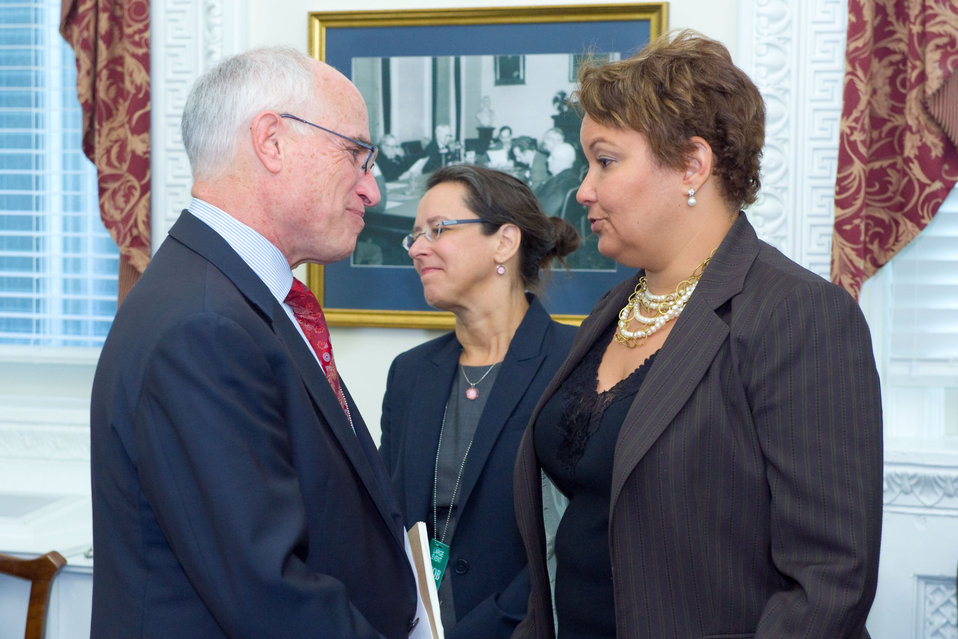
EPA Hosts Historic Meeting on Environmental Justice

Harris Sherman, Undersecretary for Natural Resources and the Environment, greeting Lisa P. Jackson, Administrator of the Environmental Protection Agency.

Read more about this historic meeting

Learn more about EPA